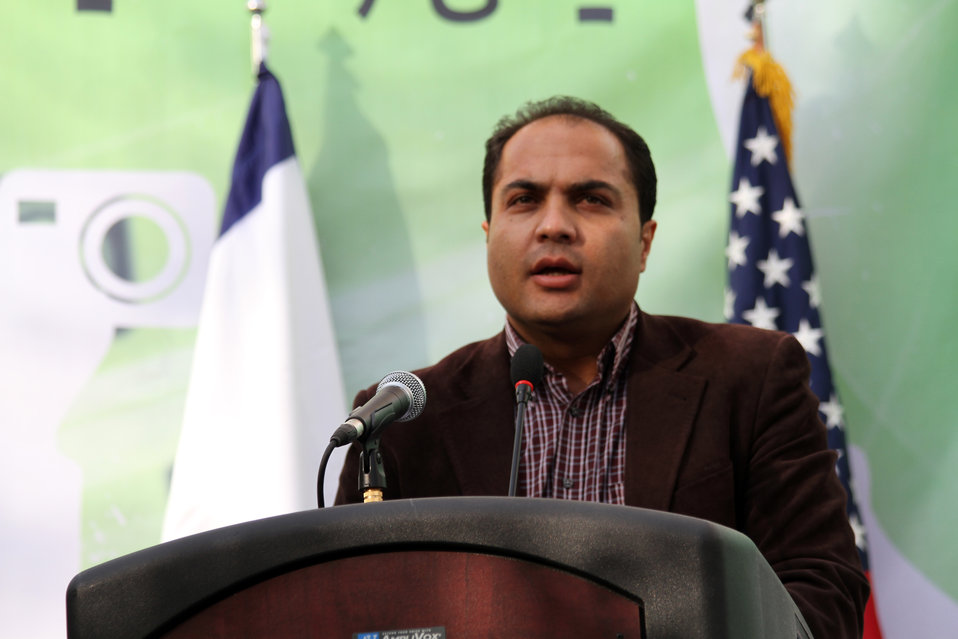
Afghan Youth Festival

Internews - USAID